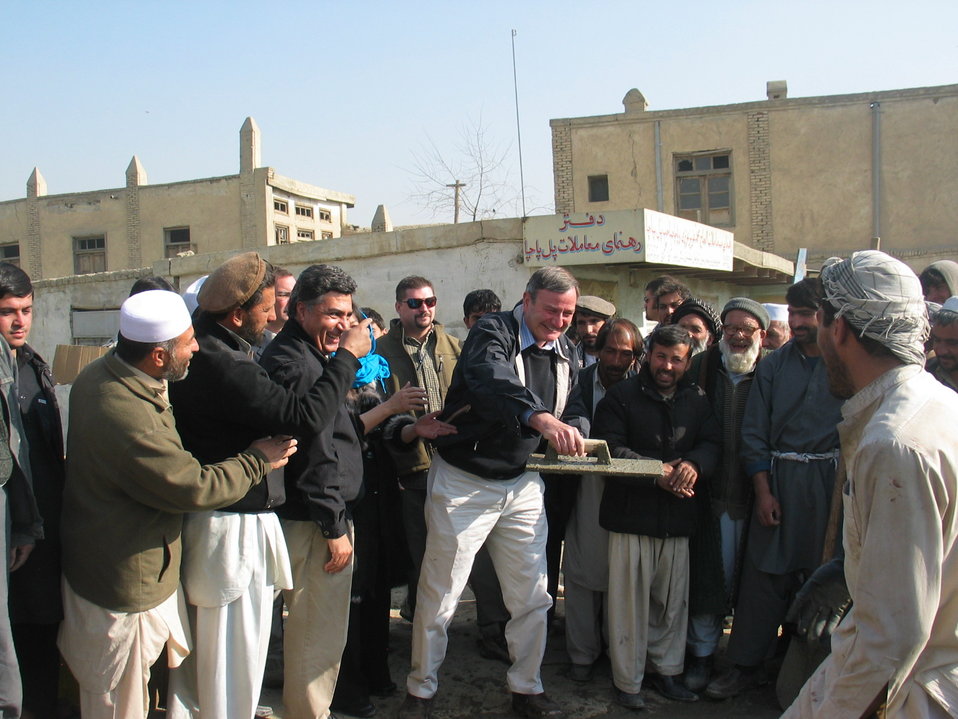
Kabul River Bridge Renovation, December 3, 2010